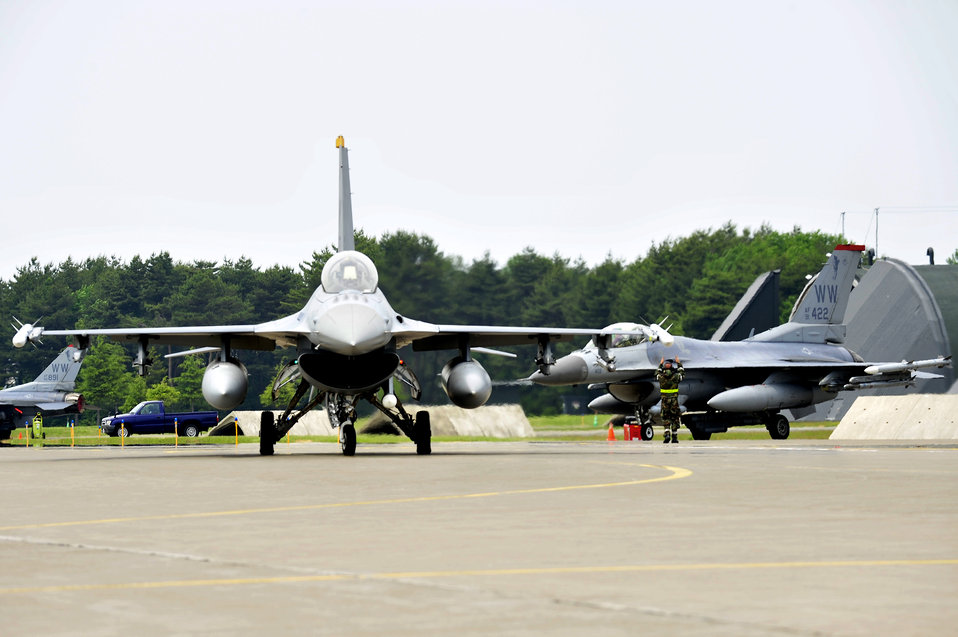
Exercise at Misawa

F-16 Fighting Falcons prepare to taxi June 22, 2011, during an exercise at Misawa Air Base, Japan.